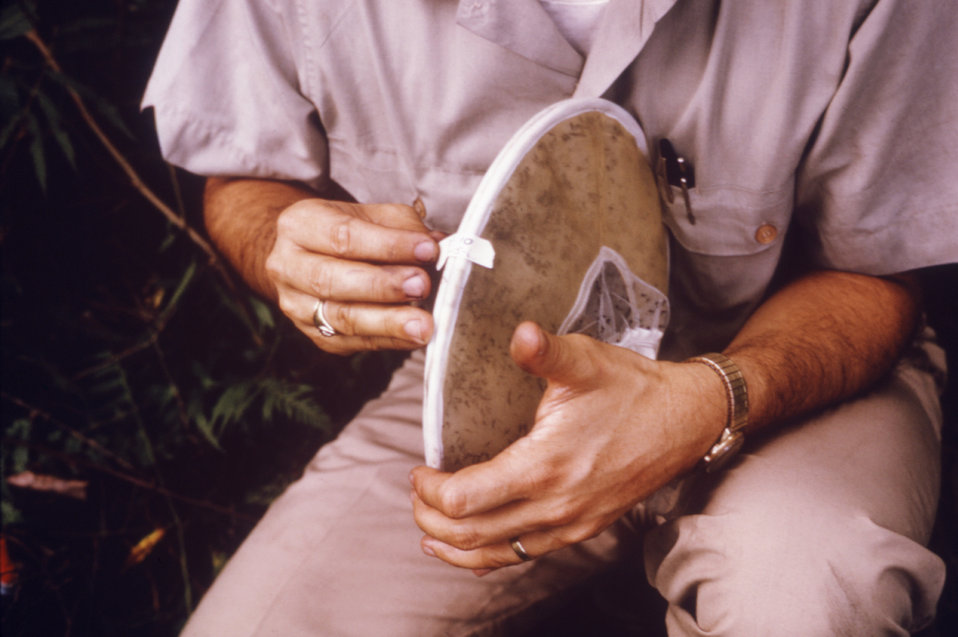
A CDC field researcher is shown here sealing the mosquito collection bag for storage during an arborvirus isolation study.